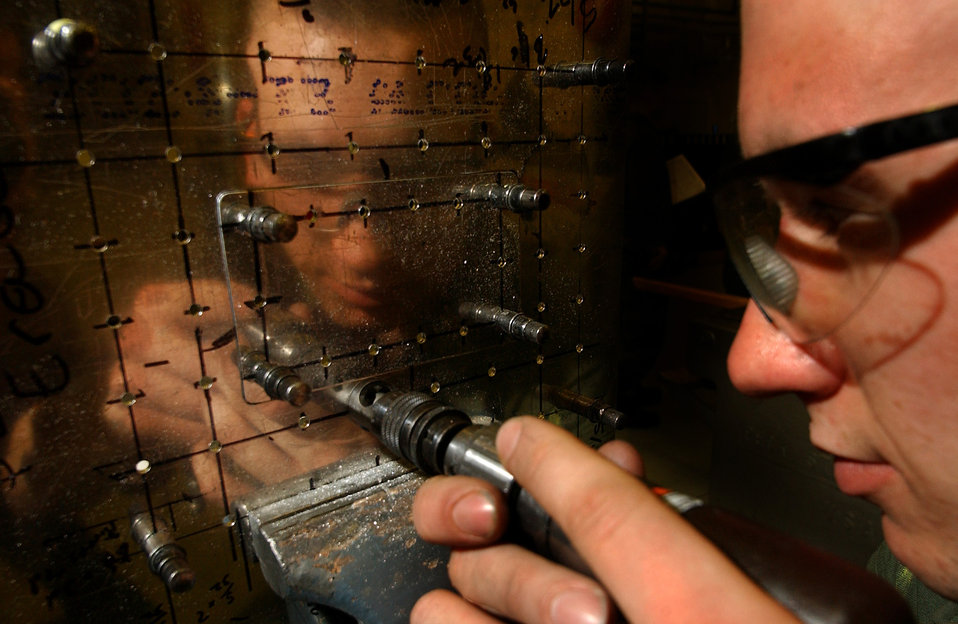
Practice makes perfect

ROYAL AIR FORCE MILDENHALL, England -- Airman 1st Class Jason Meier uses a structural flush patch as a training tool for countersinking holes. This practice keeps the outer layer of metal on the aircraft aerodynamic and maintains structural integrity by keeping the screws flush. Airman Meier is assigned to the 100th Maintenance Squadron here.